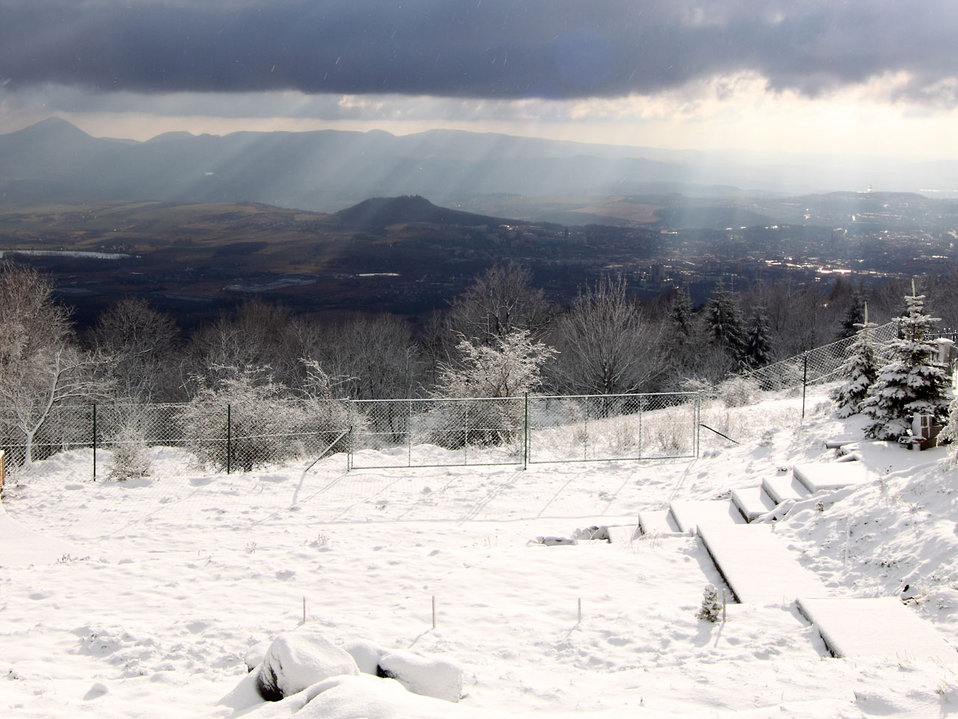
Winter garden

True winter garden.